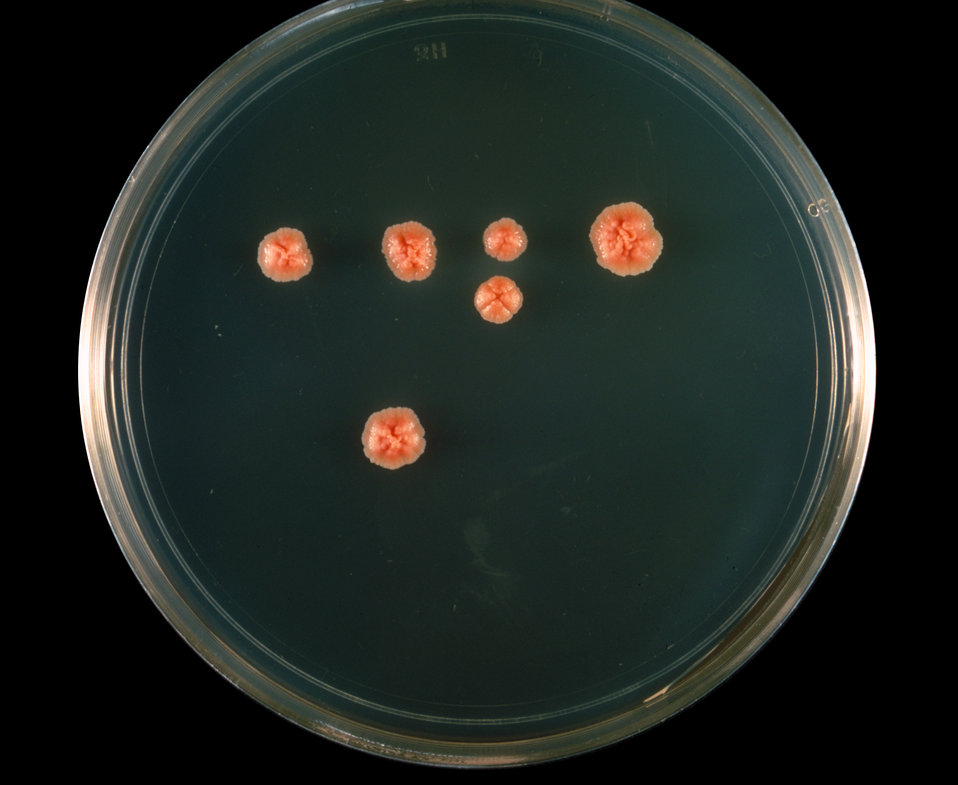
This is a plate culture of the bacteria Nocardia asteroides grown on 7H10 agar medium at 37� C.